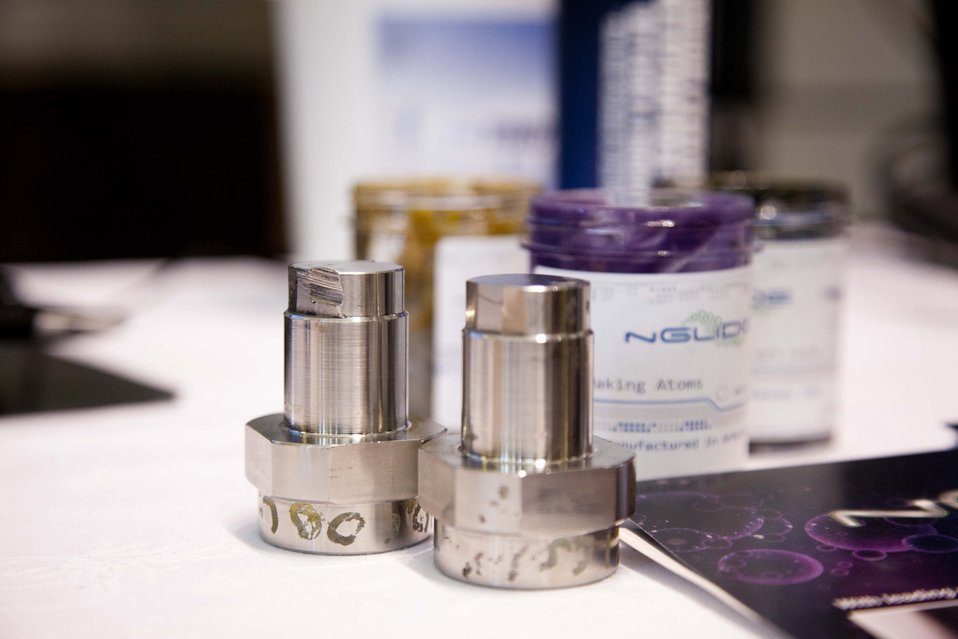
AEMC Summit

Pictured here are two parts, showing how NanoMech's TuffTek lubricant can reduce friction (and wear) on a part. The one on the right was used with TuffTek while the one on the left was not.